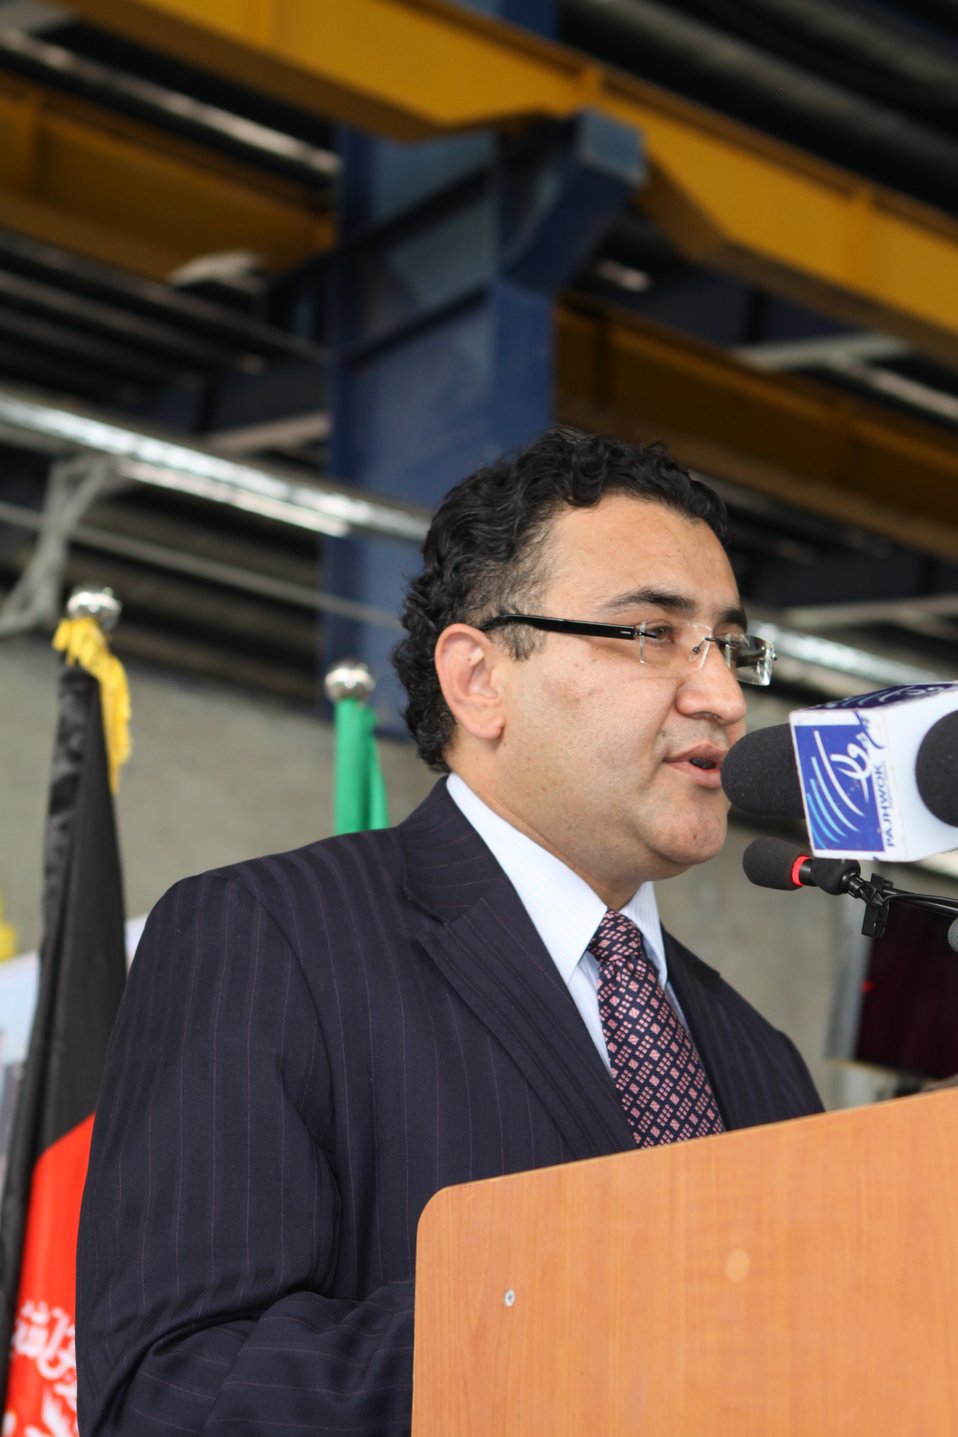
100525 Hirat Marble Conference 179